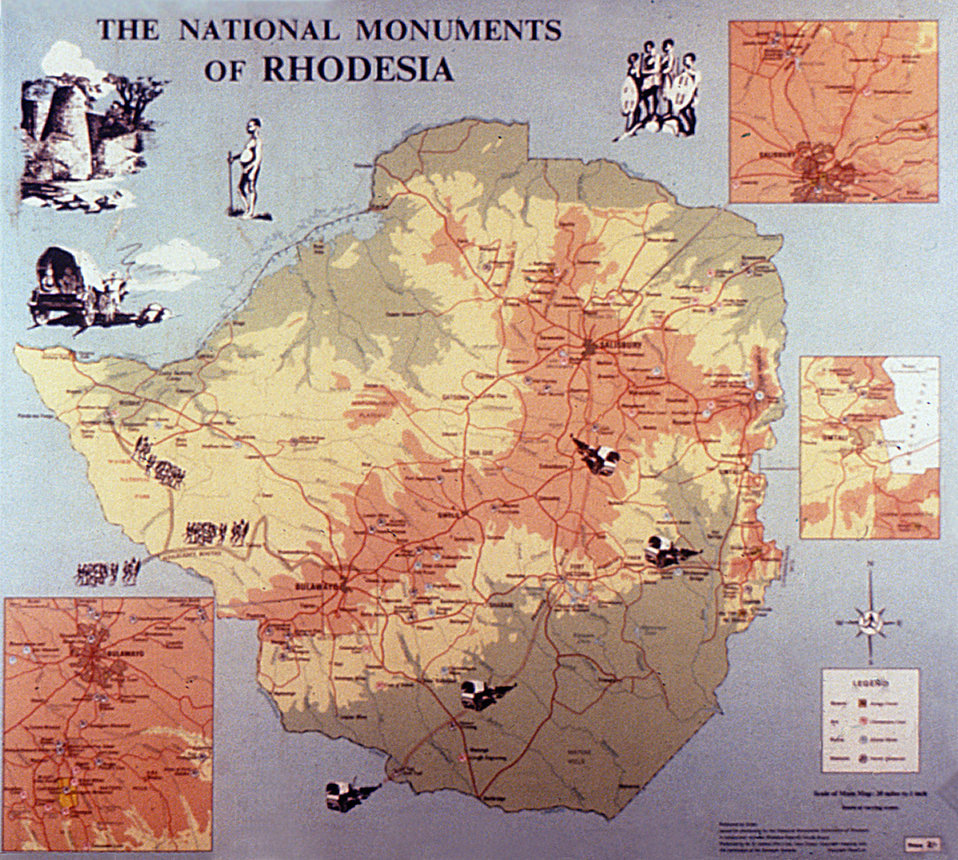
The markings on this map of Rhodesia indicated significant stops of 2 Marburg patients during their journey through the region.